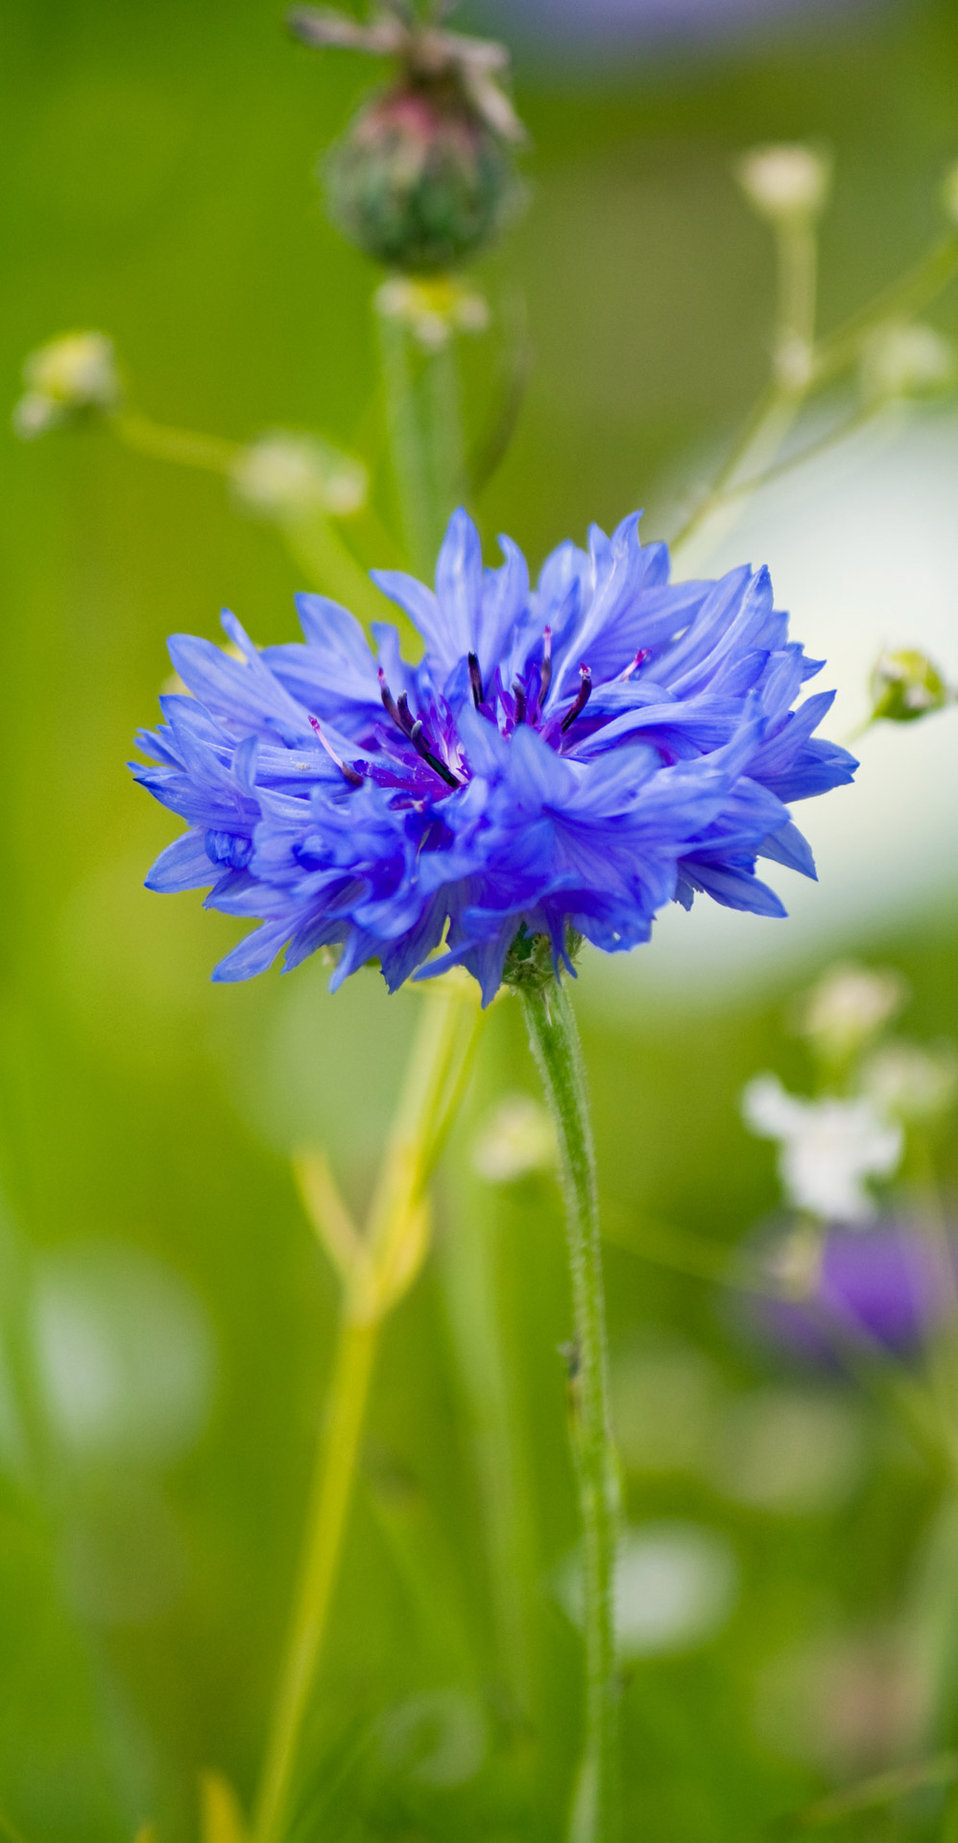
Blue flower

Close-up of a blue cornflower.